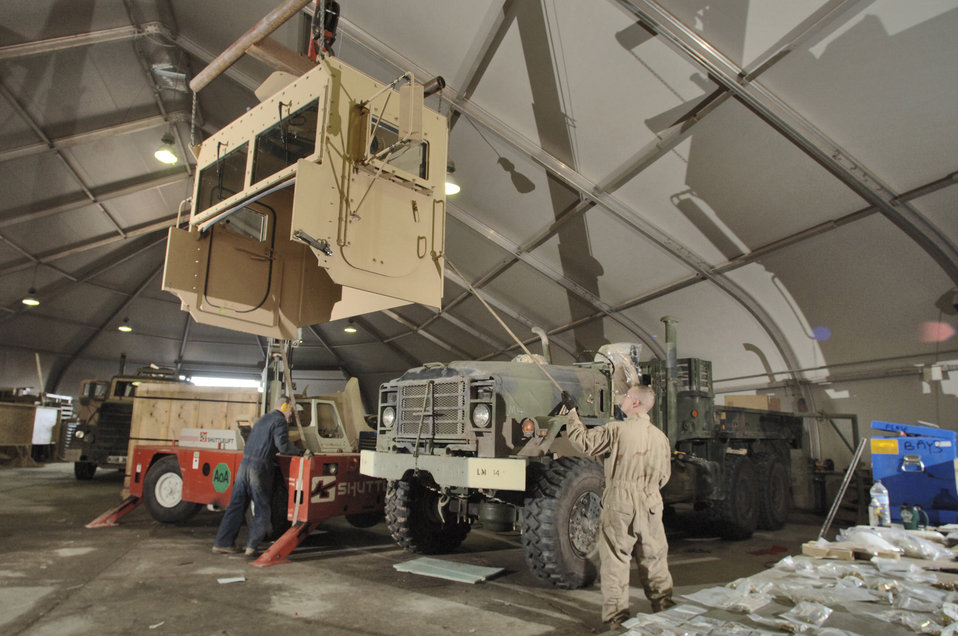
Up-armor for troops

BALAD AIR BASE, Iraq (AFPN) - Airman 1st Class Roger Hild and Staff Sgt. Kenneth Pease operate a crane as they lower an add-on-armor cab onto the lower cab section of a truck tractor. The up-armor kit is a permanent modification. This will include new air ride seats and air conditioning. The armor provides the driver and gunner protection against weapons fire and improvised explosive device explosions. Sergeant Pease and Airman Hild are assigned to the 732nd Expeditionary Logistics Squadron and are deployed from Spangdahlem Air Base, Germany.